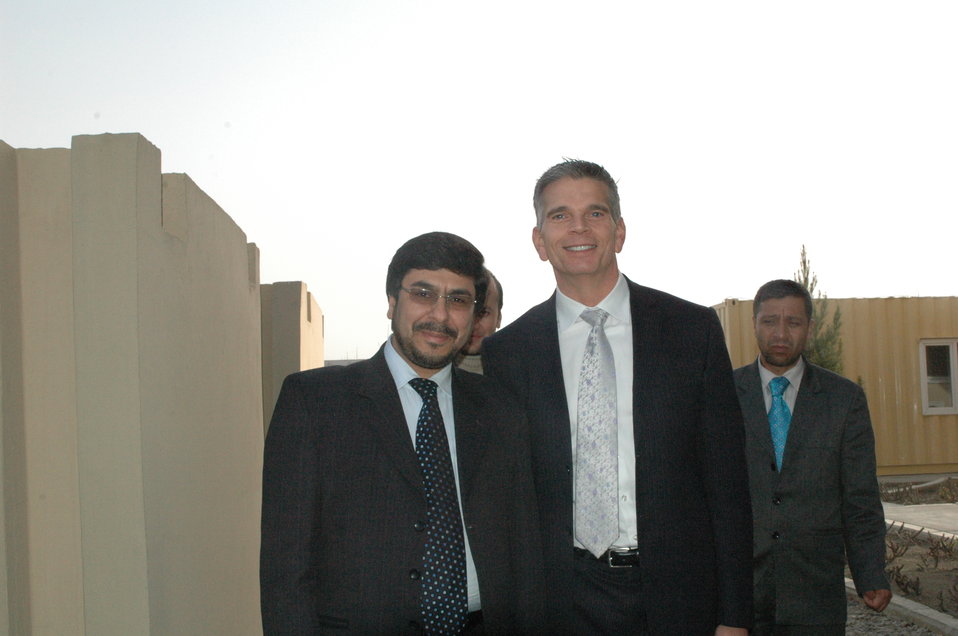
Community Based Stabilization Grants Ceremony, December 7, 2010